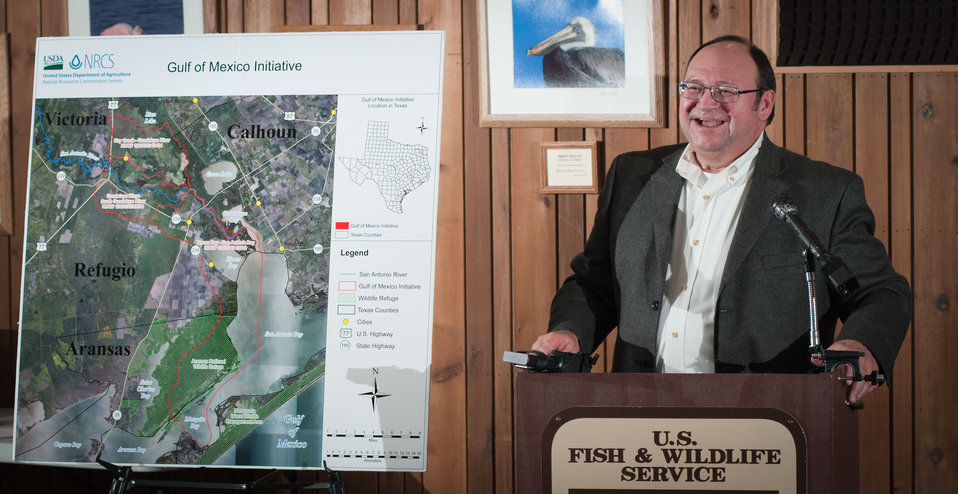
U.S. Department of Agriculture (USDA) Natural Resources Conservation Service (NRCS) State Conservationist Salvador Salinas with Federal and state partners, including representatives from U.S. Fish and Wildlife Service and local soil and water conservation districts (SWCDs) held a press conference at the Aransas National Wildlife Refuge, in Austwell, TX, on Friday, Dec. 16, 2011. Salinas covered the recent announcement of the USDA-NRCS Gulf of Mexico Initiative (GoMI) efforts to improve water quality, habitat, and the health of the Gulf ecosystem. “Launching this initiative is a top priority for NRCS in Texas because the Gulf of Mexico is one of our state’s premier natural resources. It provides vital habitat for wildlife, and creates jobs in industries that depend upon them. The health of this resource is essential to Texas as well as to the nation,” said Salinas.
The Texas initiative focuses on three watersheds in Refugio, Calhoun, Victoria and Aransas counties and ultimately the Gulf of Mexico. “What is really compelling about GoMI and other similar conservation efforts is that they prove that Texas farmers and ranchers not only feed and clothe us and power our vehicles, but they can also help protect and restore our rivers and provide more habitat for wildlife,” stated Salinas. “That’s why it is important that this conservation project is not about taking productive farm land out of production. This is a working lands initiative, so that not only are we helping to restore the health of the Gulf, but we’re also helping to sustain and enhance the productivity of the Gulf’s farms and ranches.”